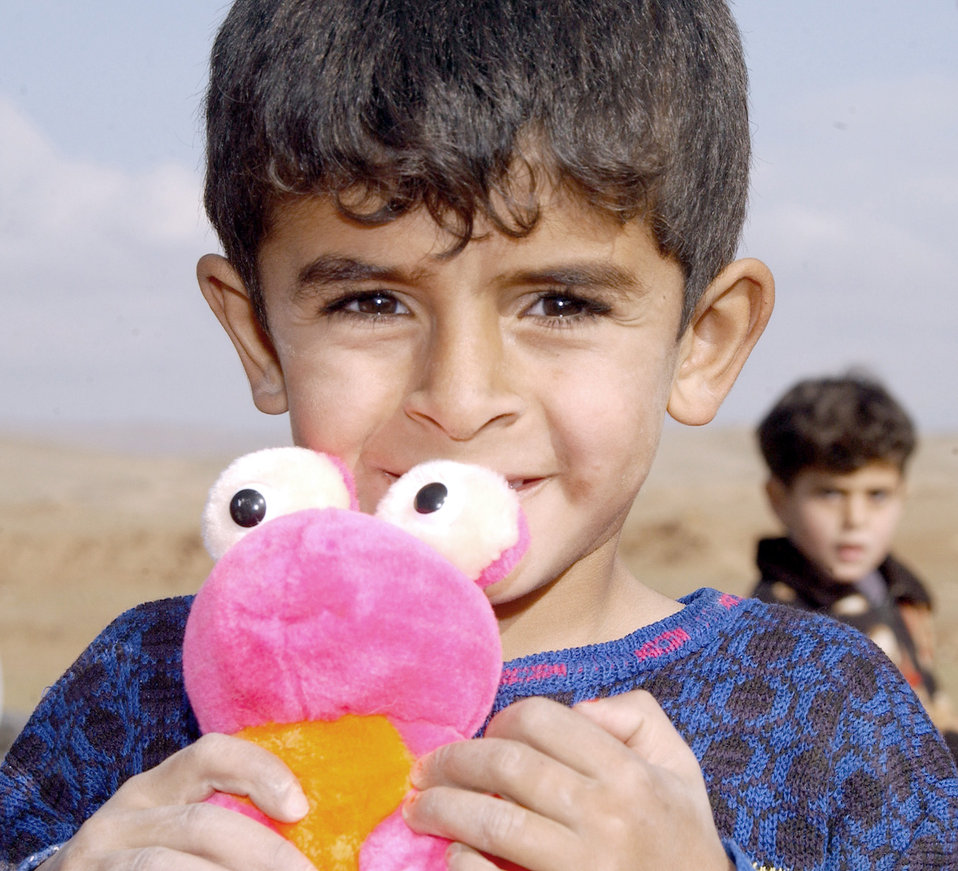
Providing relief

KIRKUK, Iraq -- A child clutches the toy that was given to him during a chapel-sponsored visit to a local village. Airmen and soldiers delivered several loads of donated boxed goods to the village sent from the United States.